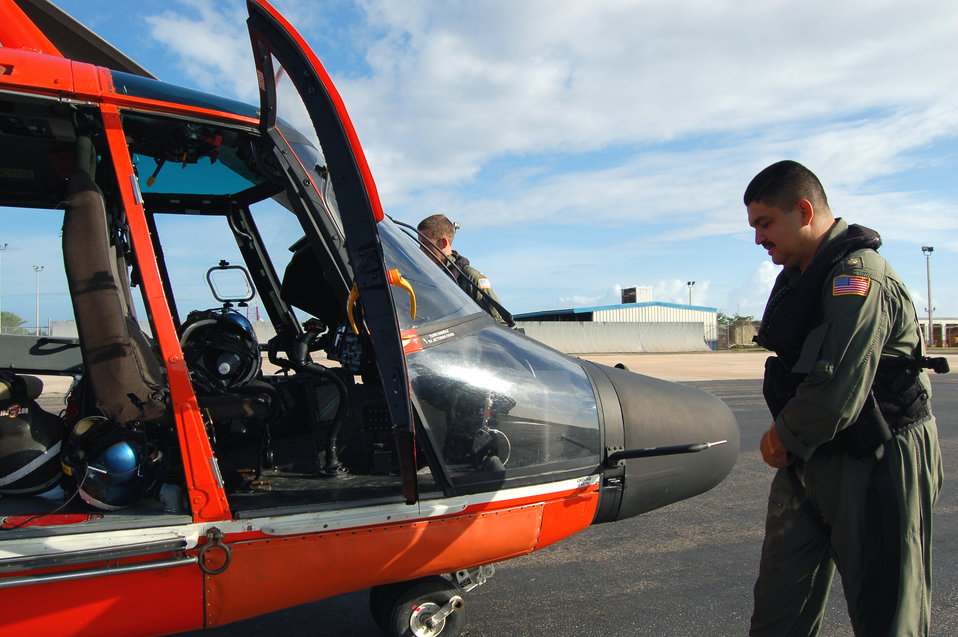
Coast Guard pilot traces roots to Air Force education opportunities

Coast Guard Lt. Cmdr. Juan Lopez does a preflight inspection on an HH-65C Dolphin prior to taking off on a training mission March 21 at Coast Guard Air Station Borinquen, Puerto Rico. The Coast Guard works with the Puerto Rican Police Department and helps them train on how to dive out from a helicopter to rescue people at sea. A former Senior Airman, Commander Lopez is an aircraft commander and the assistant operations officer at the air station. The Coast Guard provides a search and rescue capability for 1.2 million square miles around the Caribbean.